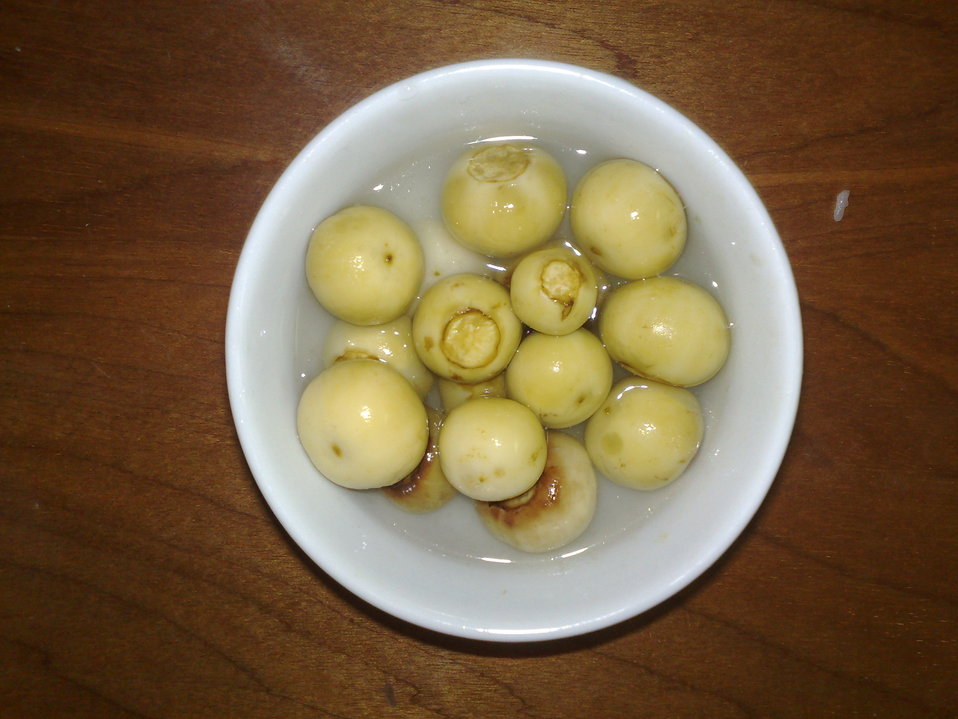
Tiếng Việt: Cà muối xổi, tôi tự chụp và tải lên để minh hoạ cho bài viết Cà pháo. Salted Thai eggplant